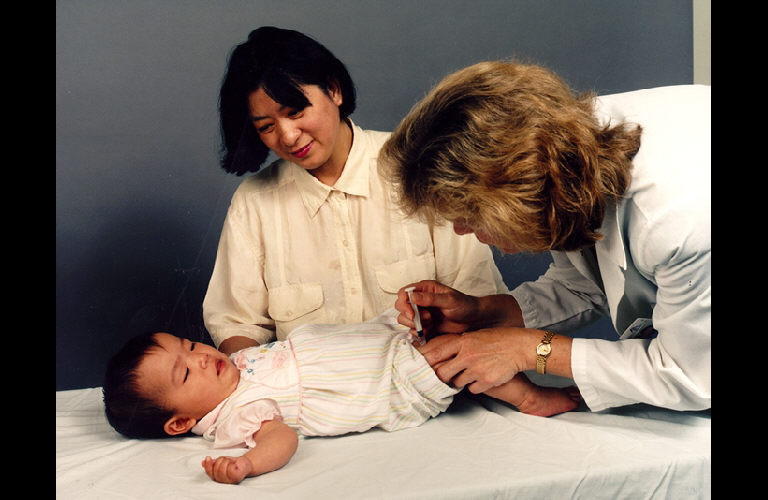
Childhood immunization.